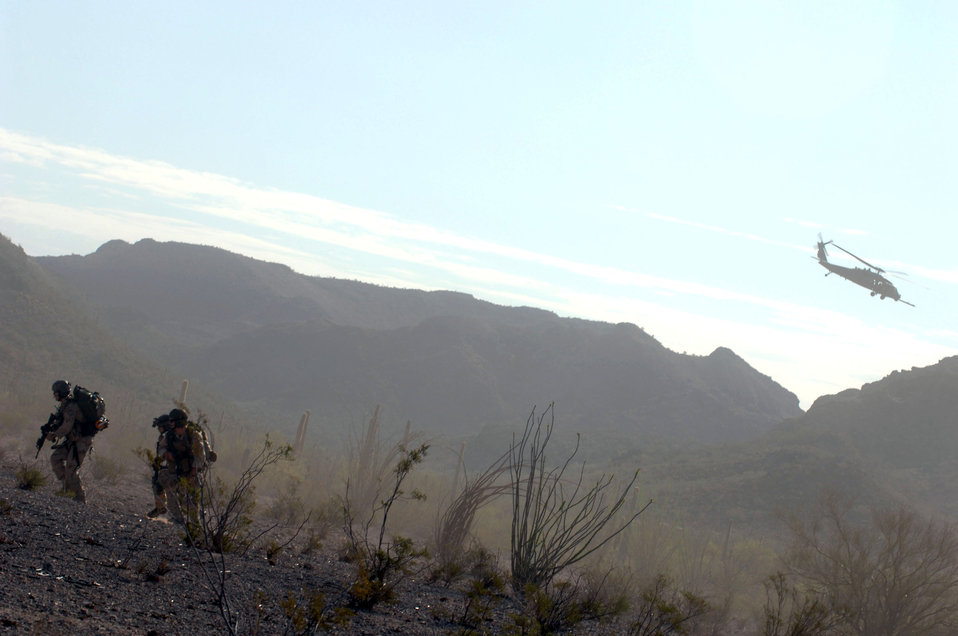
Angels bring thunder

48th Rescue Squadron pararescueman move out after being inserted by a 55th Rescue Squadron HH-60 Pave Hawk during Exercise Angel Thunder July 16 at Gila Bend, Ariz. The exercise is designed to provide realistic combat search and rescue training for Airmen in combat rescue forces. Members of the 48th and 55th Rescue Squadrons are from Davis-Monthan Air Force Base, Ariz.